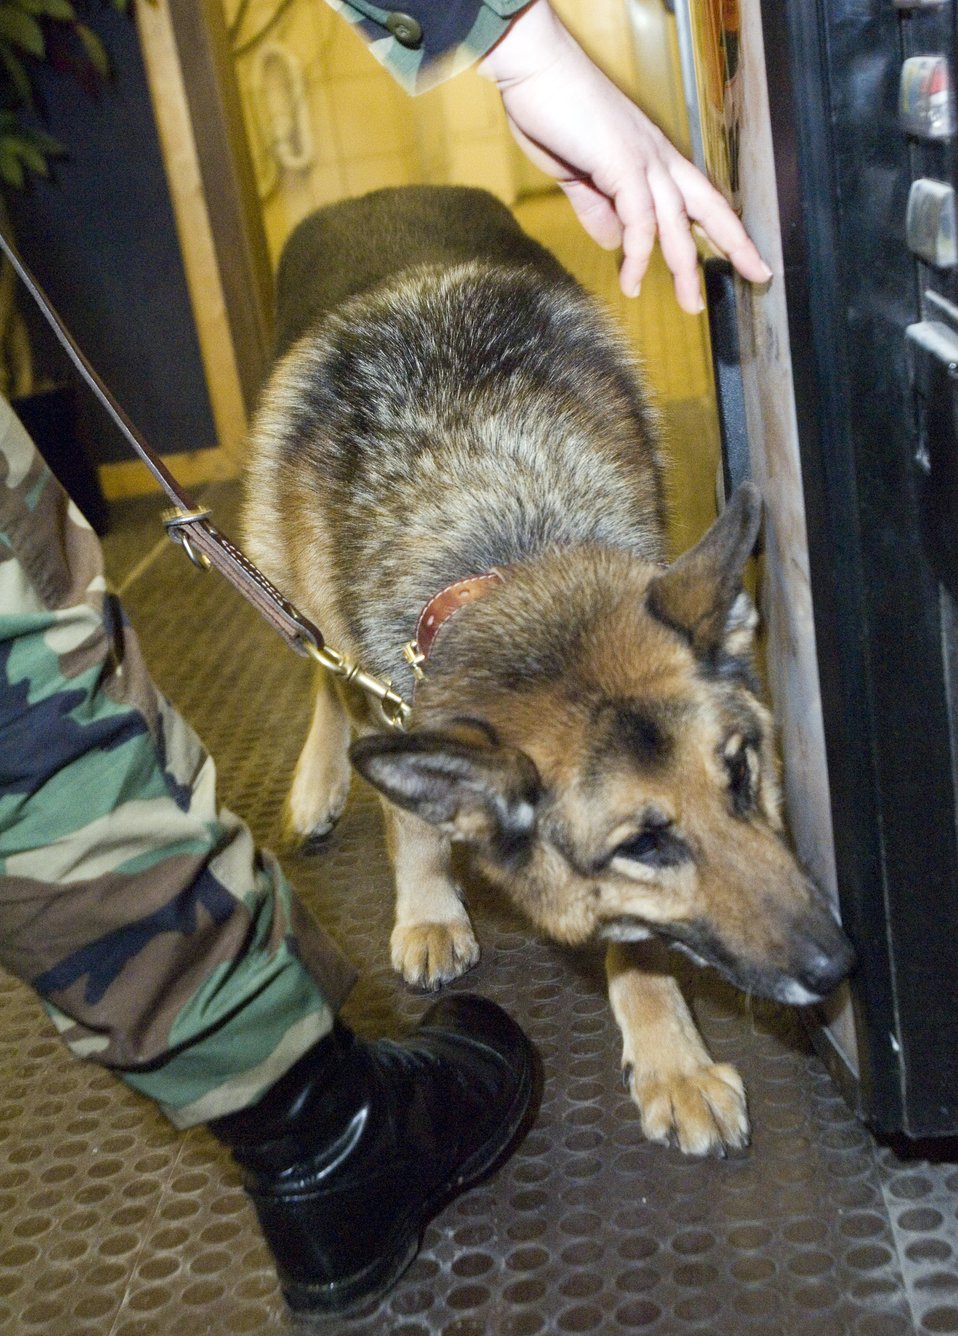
Four-legged partner

RAMSTEIN AIR BASE, Germany (AFPN) -- Staff Sgt. Gwendolyn Dodd directs her military working dog, Ron, during training at a dormitory. Sergeant Dodd is assigned to the 435th Security Forces Squadron and trains with Ron at least three times a week.